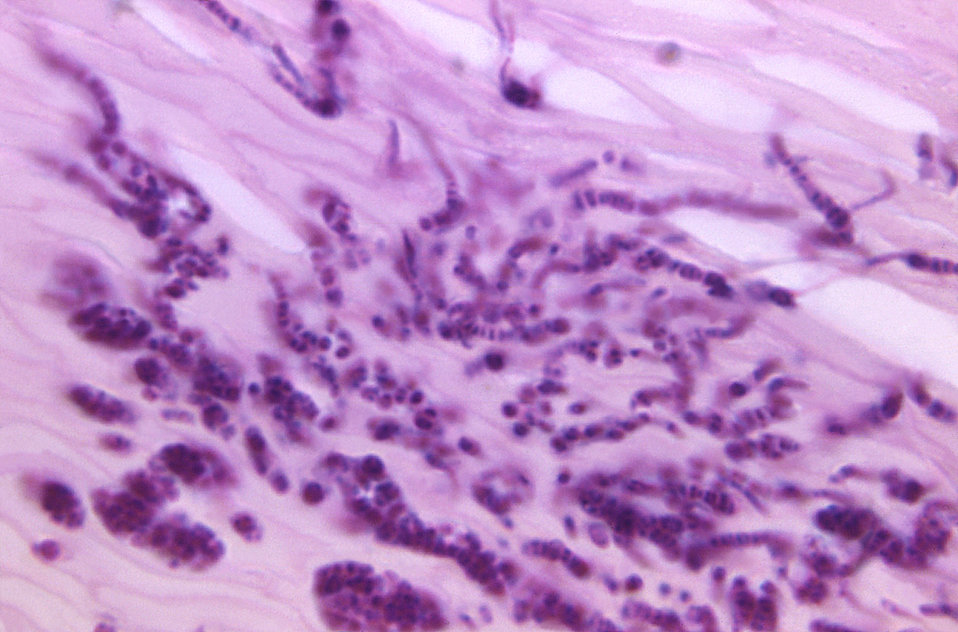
Using a PAS staining technique, and magnified 1187X, this photomicrograph of a skin sample from the sole of a patient's foot, revealed histopathologic signs indicatine of Pitted Keratolysis due to a Gram-positive Dermatophilus sp. bacterial infection.